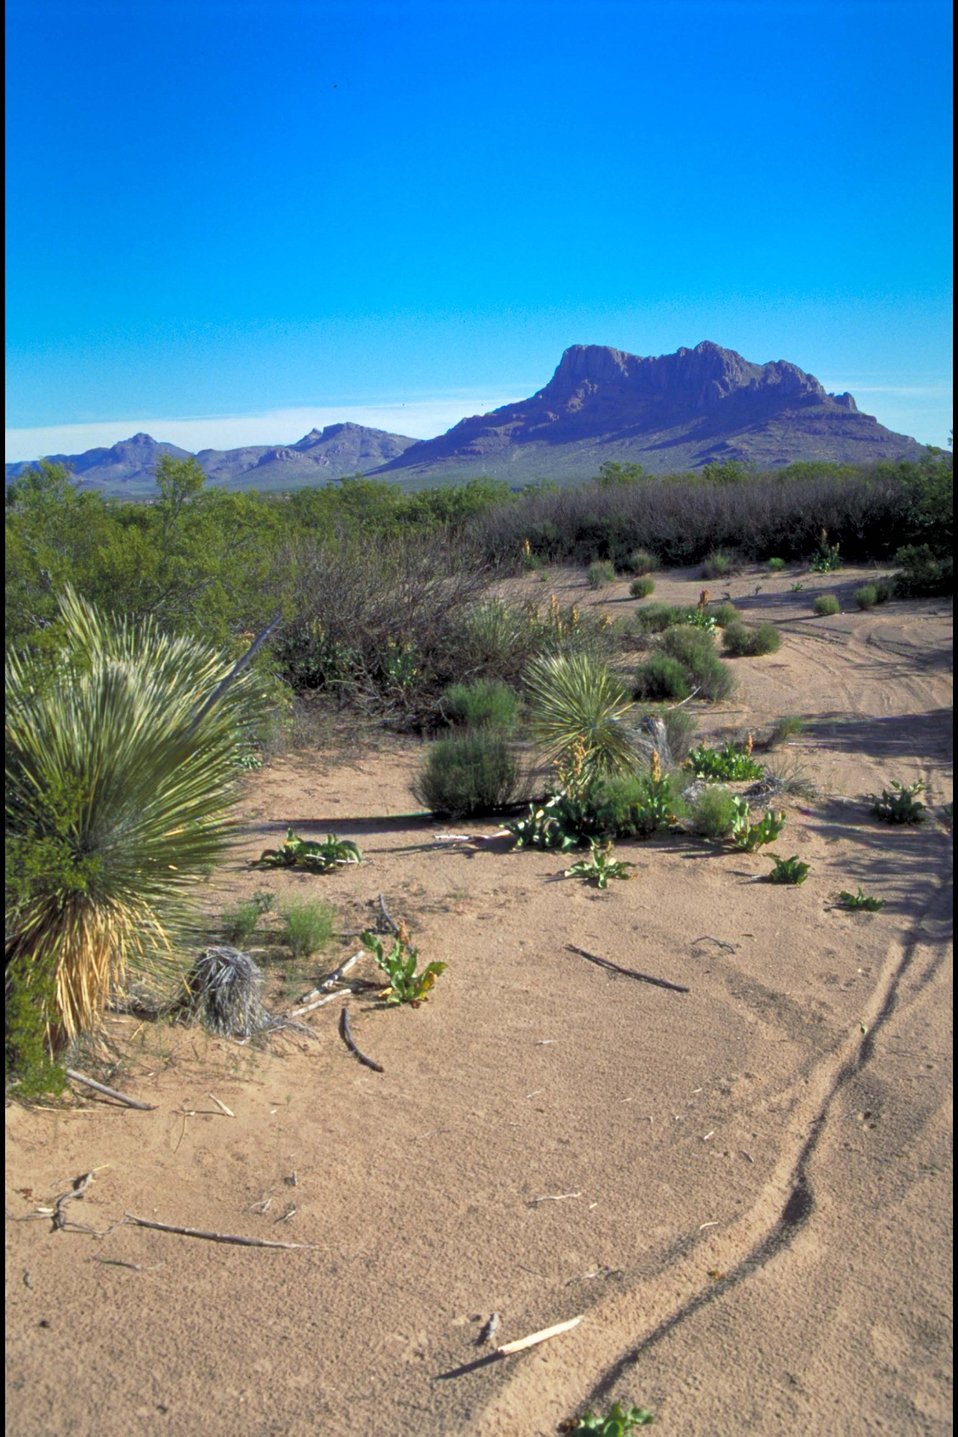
Sandy Wash in Safford